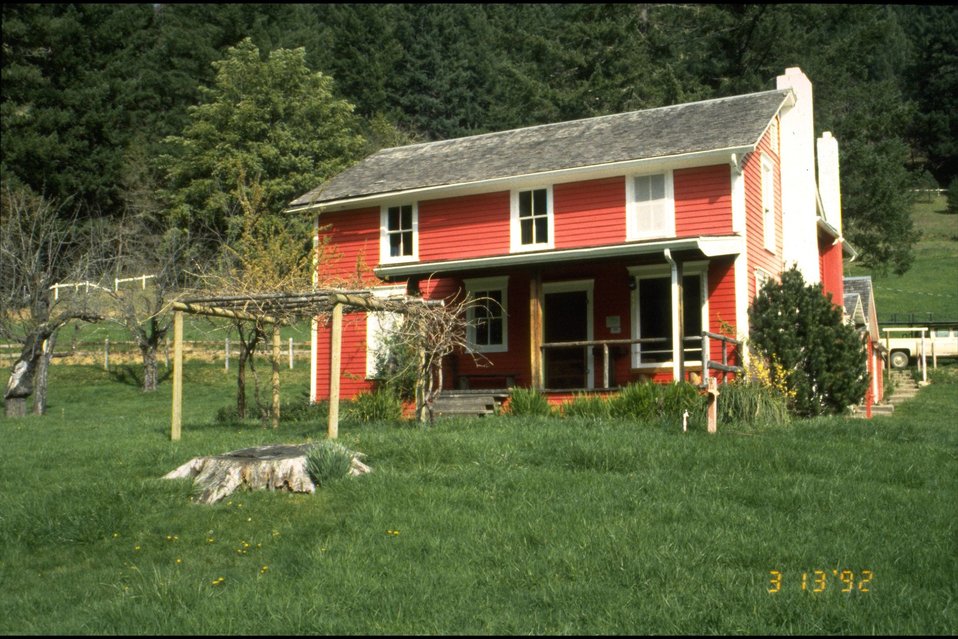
Rogue River Ranch - Main house, front.